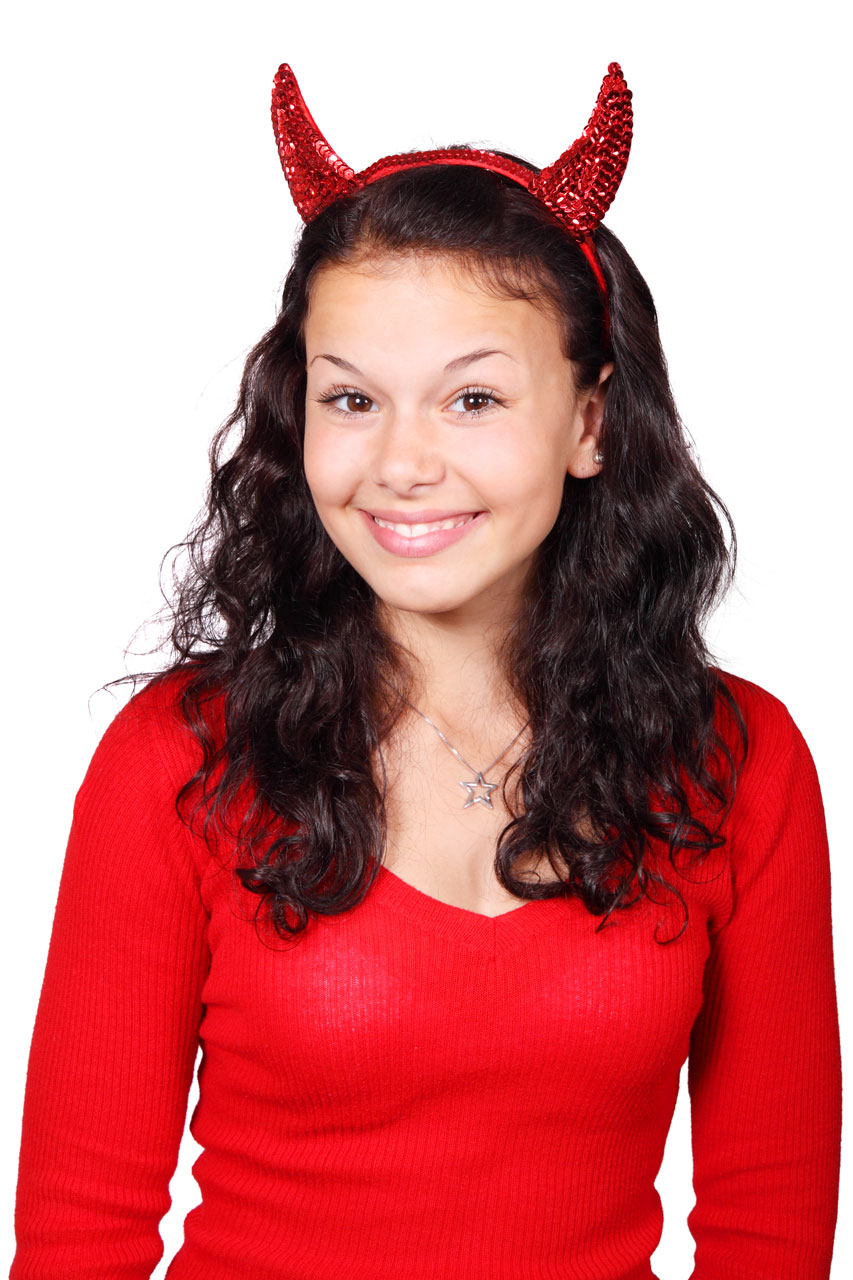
Cute red devil smiling isolated on white background.